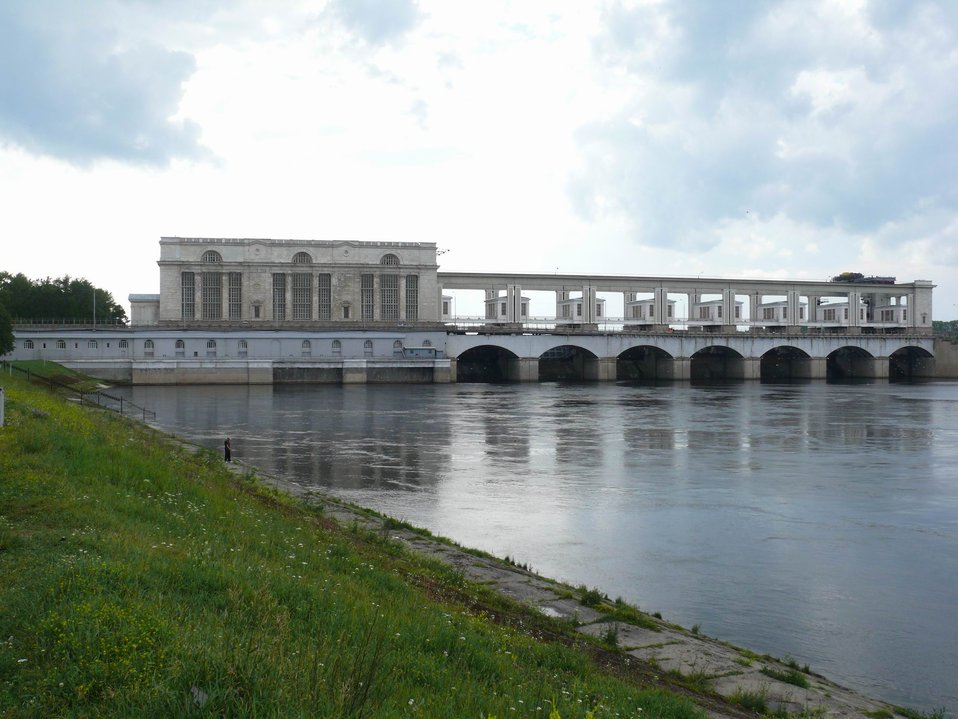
Русский: Угличская ГЭС